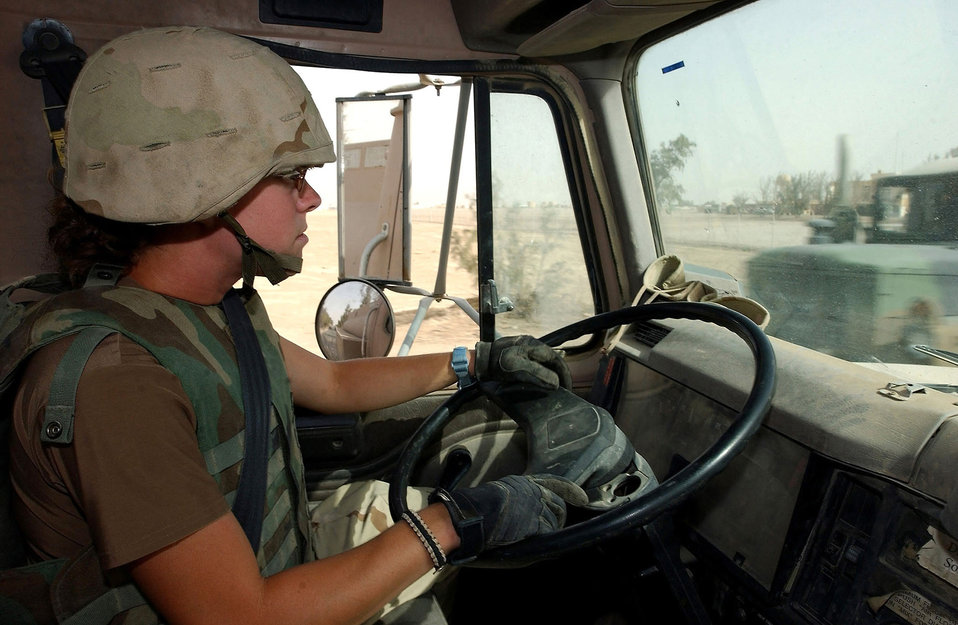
Fuels Airmen keep more than planes operational

ALI BASE, Iraq -- Airman 1st Class Sarah Stewart drives a diesel truck to provide fuel to more than 40 U.S. servicemembers and coalition customers daily here. The installation is powered by fuel versus electricity, and without it Airmen would not have any of the necessities taken for granted here. Airman Stewart is a fuels specialist with the 407th Expeditionary Logistics Readiness Squadron and is deployed from McConnell Air Force Base, Kan.